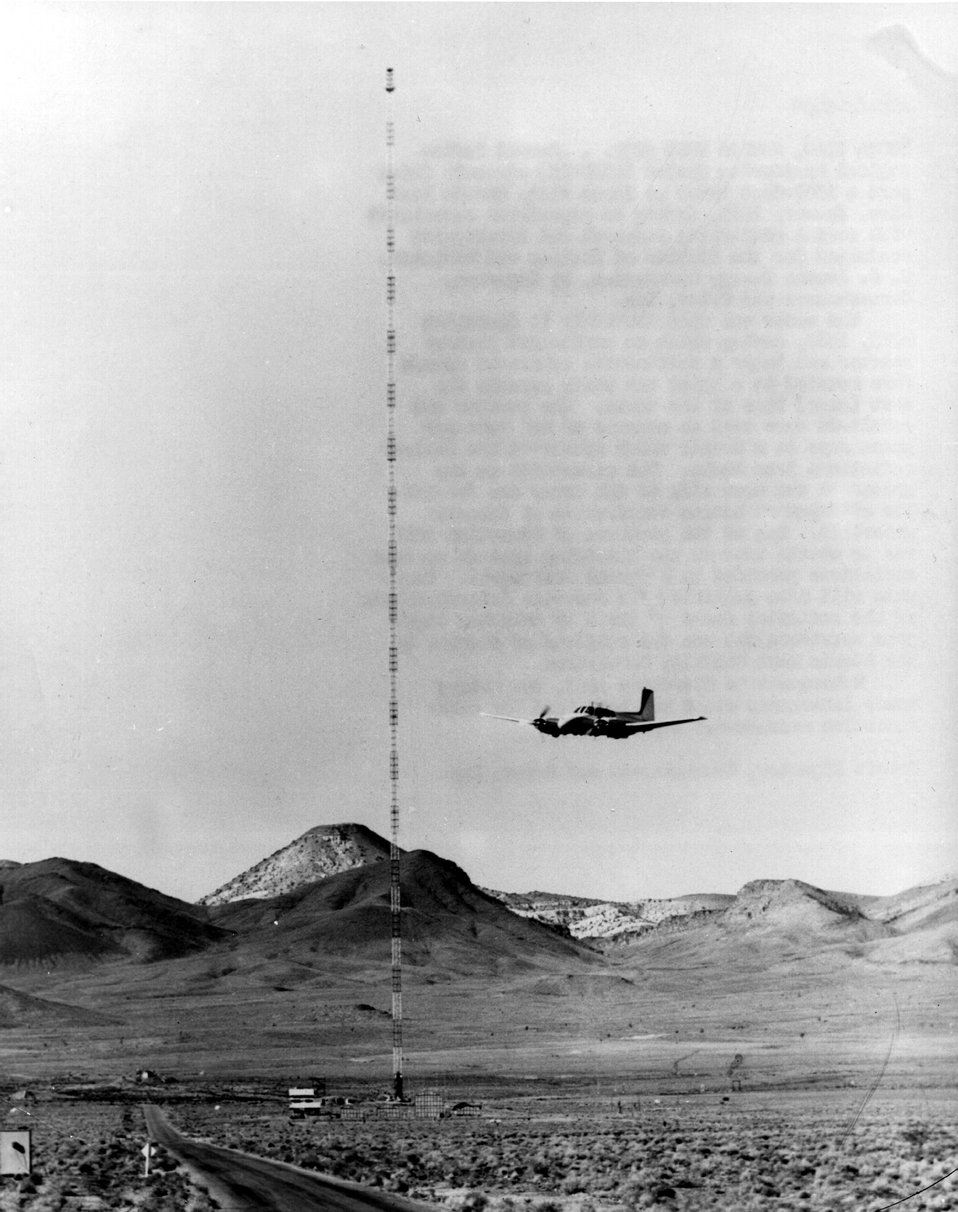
Aerial Radiological Monitoring System (ARMS-II) aircraft flies past a 1527-foot tower at Yucca Flat during an experimet associated with aerial monitoring research and development conducted for the Division of Biology and Medicine, U.S. Atomic Energy Commission. c. 1963